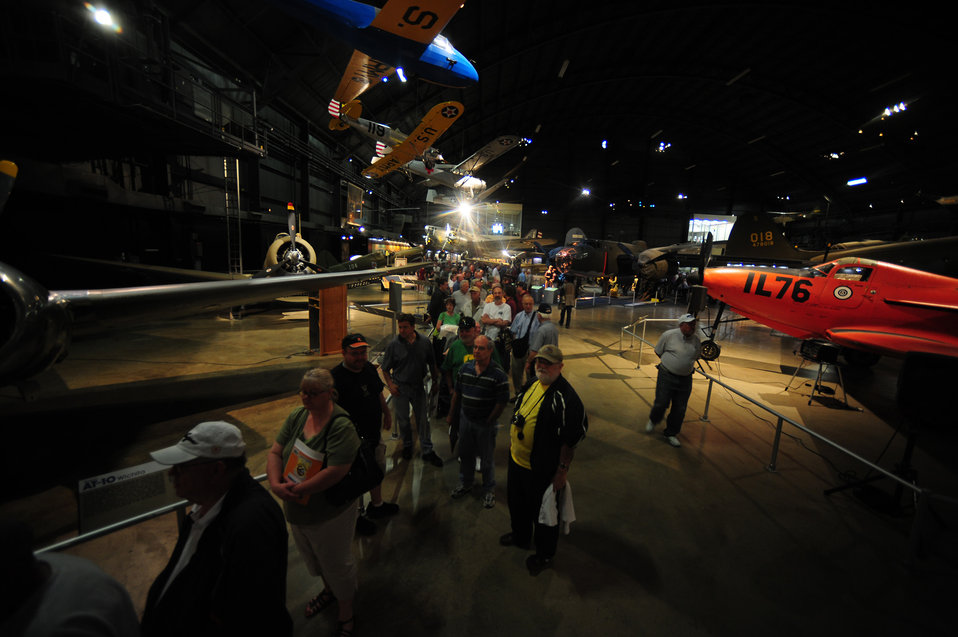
68th Doolittle Raiders Reunion

Thousands of visitors attend the Doolittle Raiders' 68th reunion at the National Museum of the U.S. Air Force, Wright-Patterson Air Force Base, Ohio, April 16, 2010. The event commemorates the anniversary of the Doolittle Raid on Tokyo. Visitors waiting for autographs arrived hours early and formed lines that wound through multiple galleries and corridors.